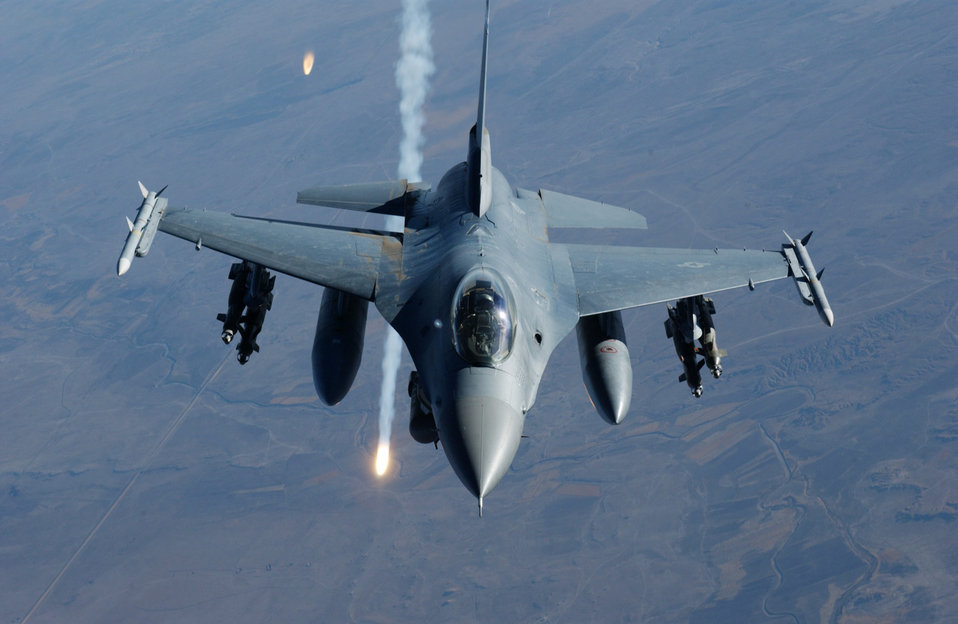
Air power!

OVER IRAQ -- An F-16 Fighting Falcon launches flares during a mission Aug. 18. The aircraft is assigned to the 332nd Air Expeditionary Wing at Balad Air Base, Iraq, from the New Mexico Air National Guard.